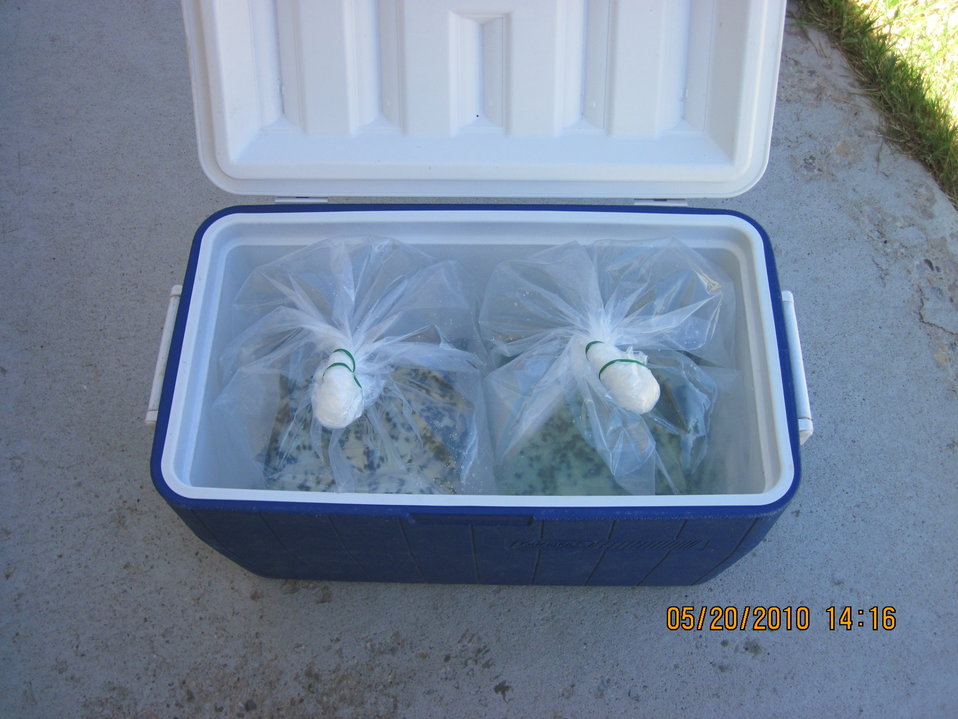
Wyoming Tadpoles Ready to Ship

The tadpoles are shipped to various other breeding facilities around the country to be raised into adulthood.